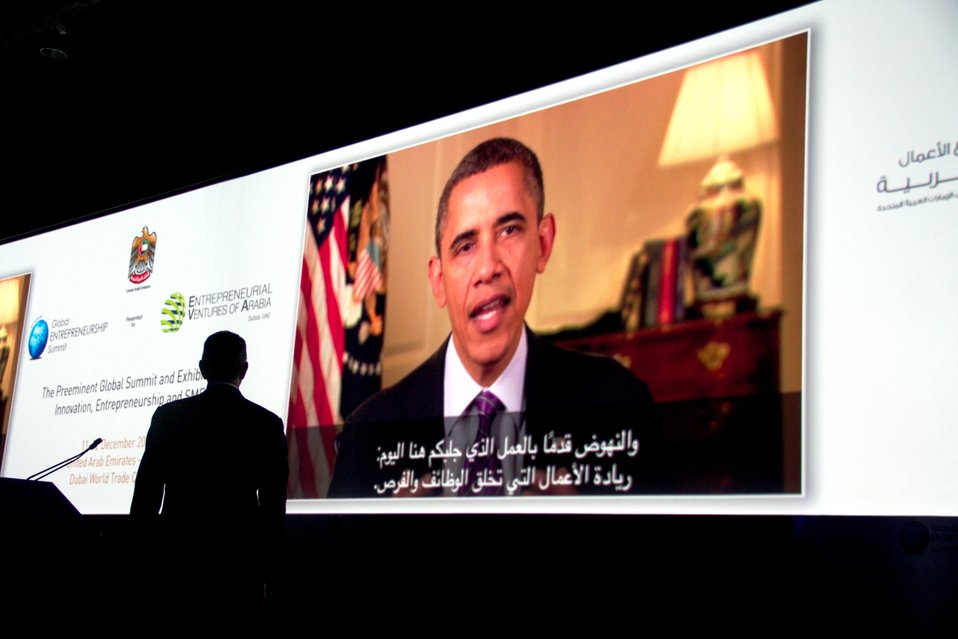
Under Secretary Sanchez Introduces President Obama’s Video Message

Under Secretary of Commerce for International Trade Francisco J. Sanchez introduces President Barack Obama’s video message at the Global Entrepreneurship Summit (GES) in Dubai, United Arab Emirates, December 11, 2012.